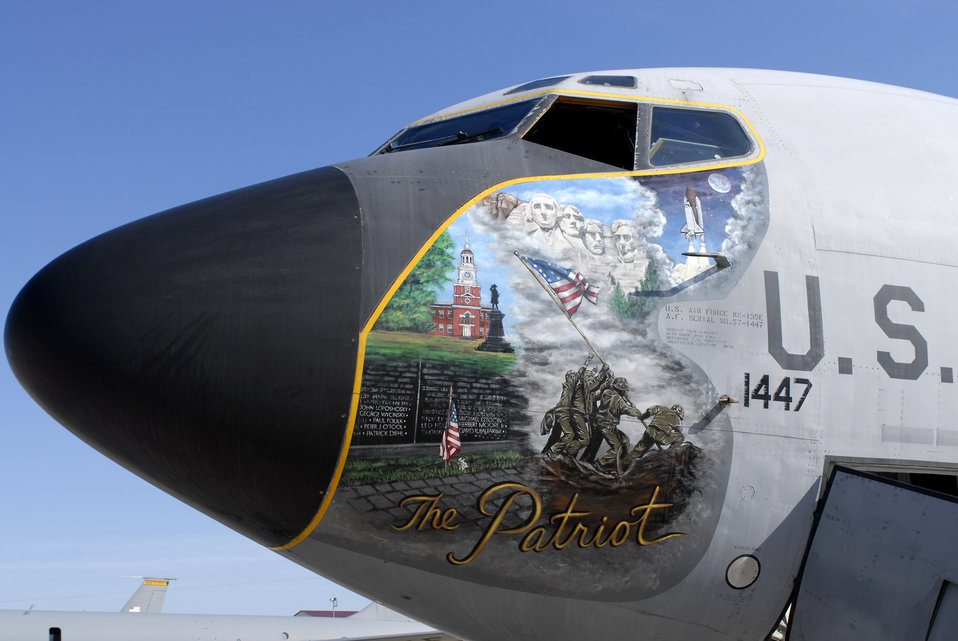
Iowa's KC-135E retires as 'snow bird' in Arizona

An Iowa Air National Guard's aging KC-135 Stratotanker, displaying patriotic nose art, is about to retire. The KC-135E assigned to the 185th Air Reserve Wing in Sioux City, Iowa, was flown out by a flight crew from Tinker Air Force Base, Okla., to Davis-Monthan AFB in Tucson, Ariz., where the aircraft will most likely be retired. The 185th ARW is on track to convert to the newer KC-135 R model this year.